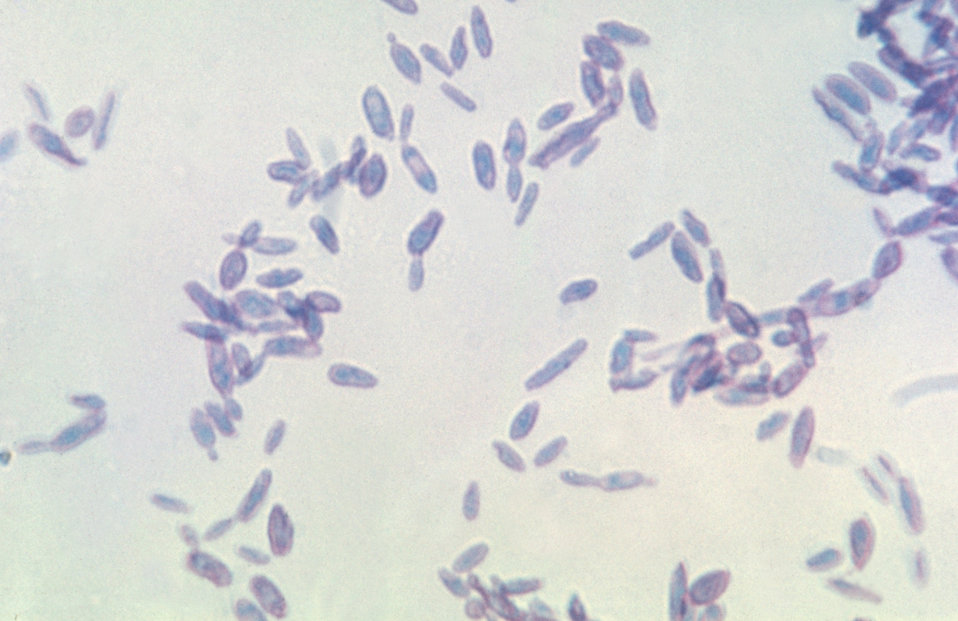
Shown here is a photomicrograph of the fungus Sporothrix schenckii during yeast phase.